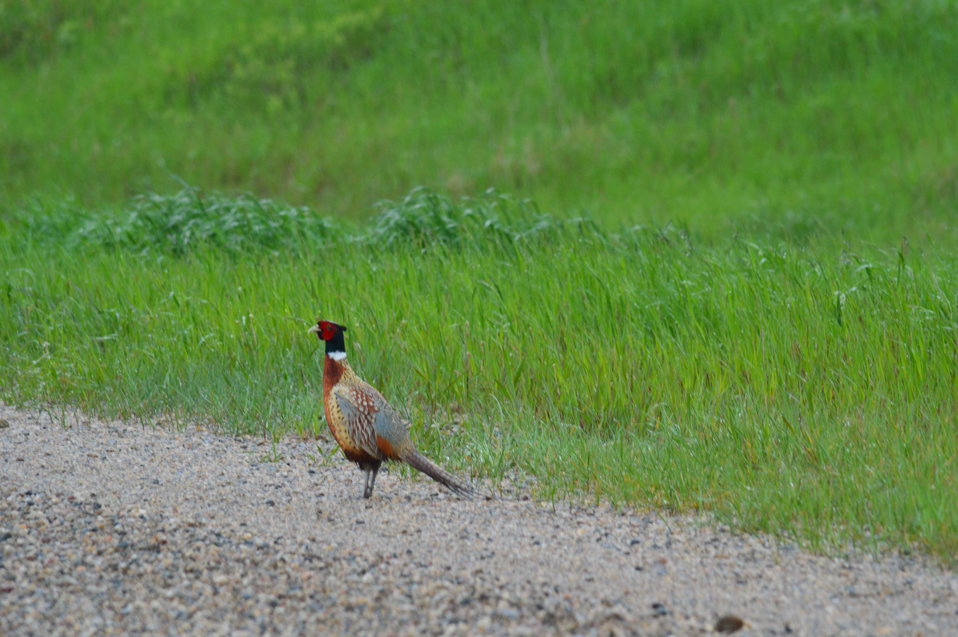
Ring-necked pheasant

Scenery and wildlife at Lost Lake National Wildlife Refuge in North Dakota.